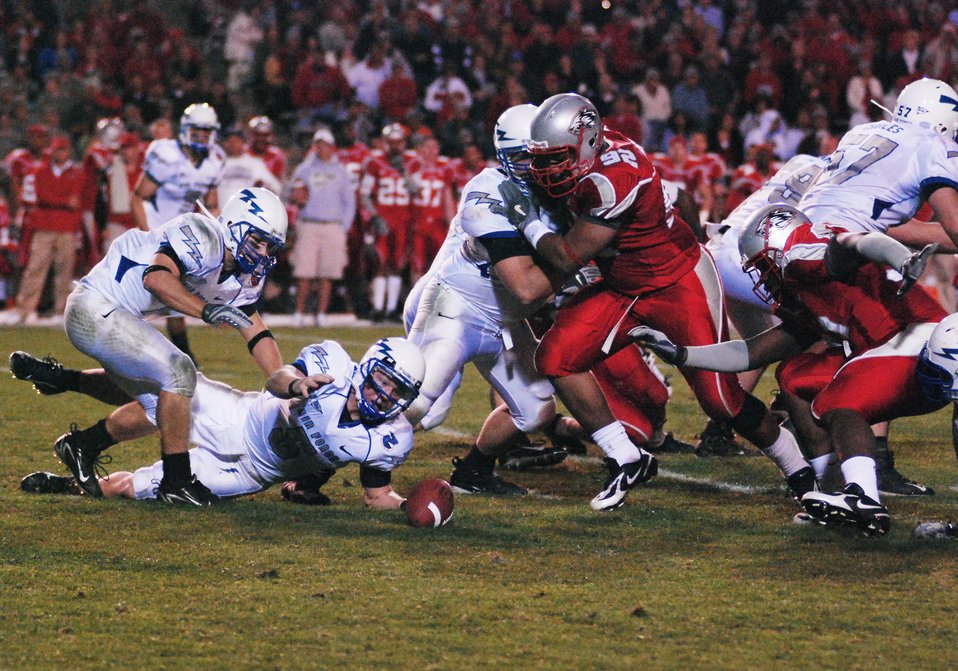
Falcons self destruct in 34-31 loss

Falcon quarterback Shaun Carney dives for a fumbled snap during Air Force's 34-31 loss to the New Mexico Lobos Oct. 25 at University Stadium in Albuquerque. The fumble was one of five turnovers committed by the bluesuiters.